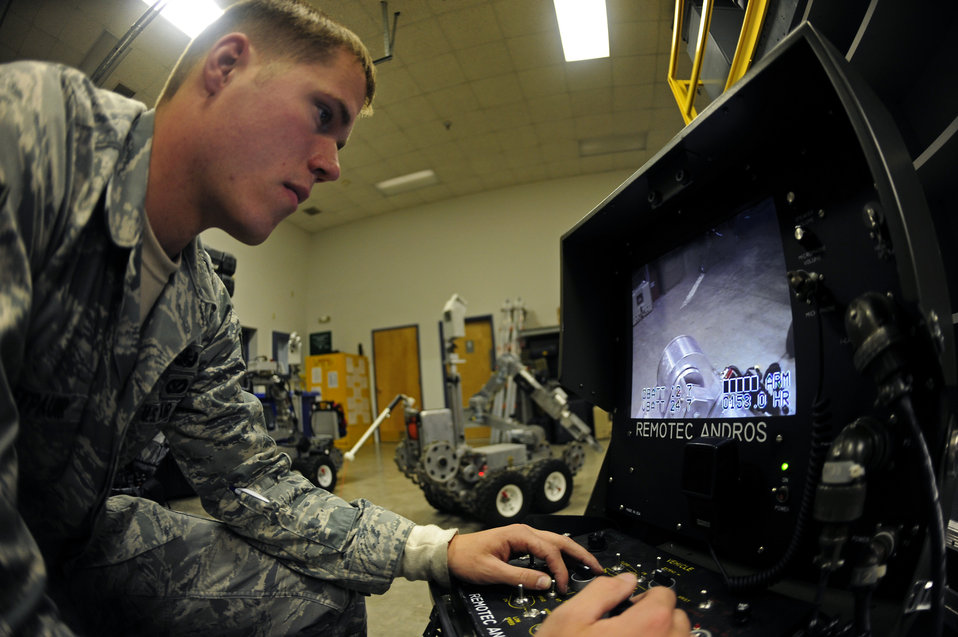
Practicing remotely

Senior Airman Timothy Hoffpauir controls a Remotec bomb disposal robot, using a remote control panel Dec. 1, 2010, at Ellsworth Air Force Base, S.D. The robot can be operated up to 1,250 feet away from the control unit, which helps protect EOD technicians from being injured by an explosion. Airman Hoffpauir is an explosive ordnance disposal technician with the 28th Civil Engineer Squadron.